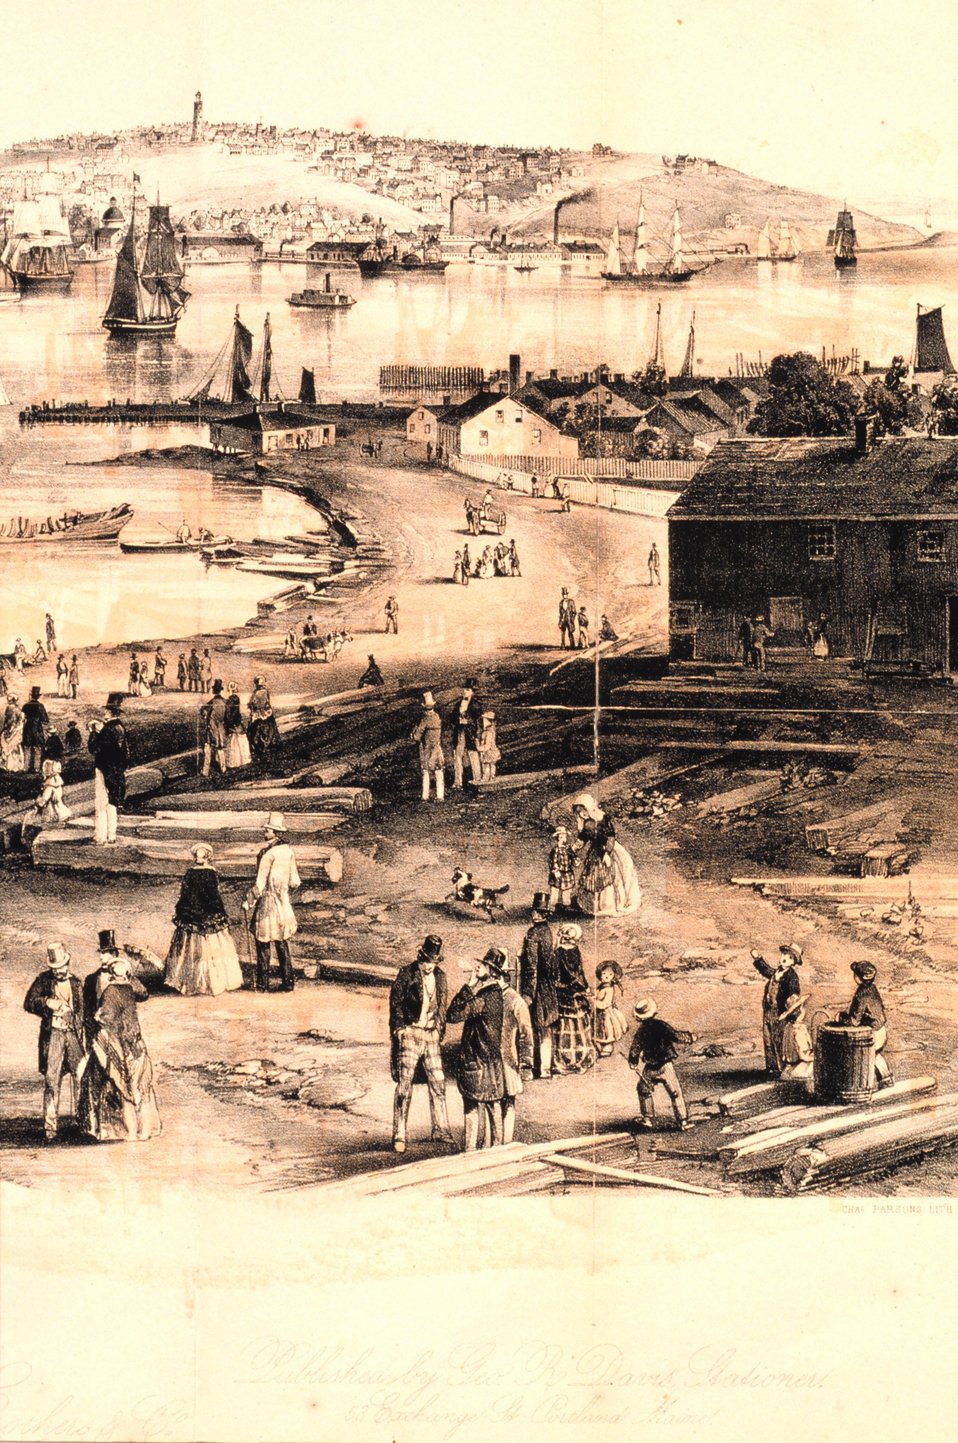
Right quarter detail of engraving of Portland Harbor